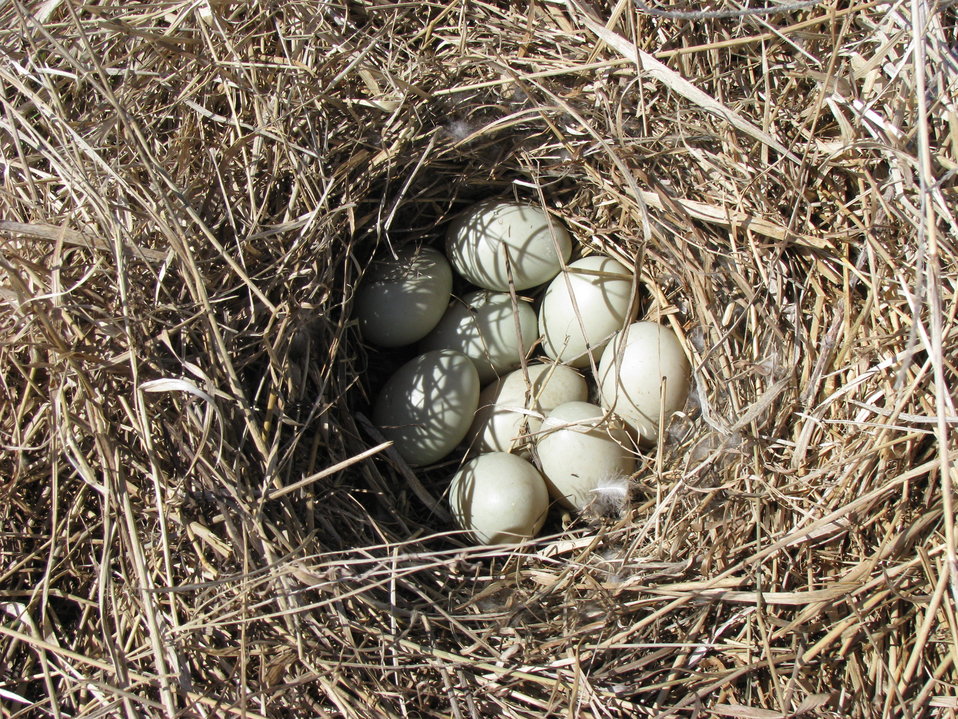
Mallard Nest

Mallards are one species of duck that nests on the ground in uplands. The hen incubates for roughly 28 days before the ducklings hatch. The hen then moves her brood to the water. This nest was found on Wolf WPA.